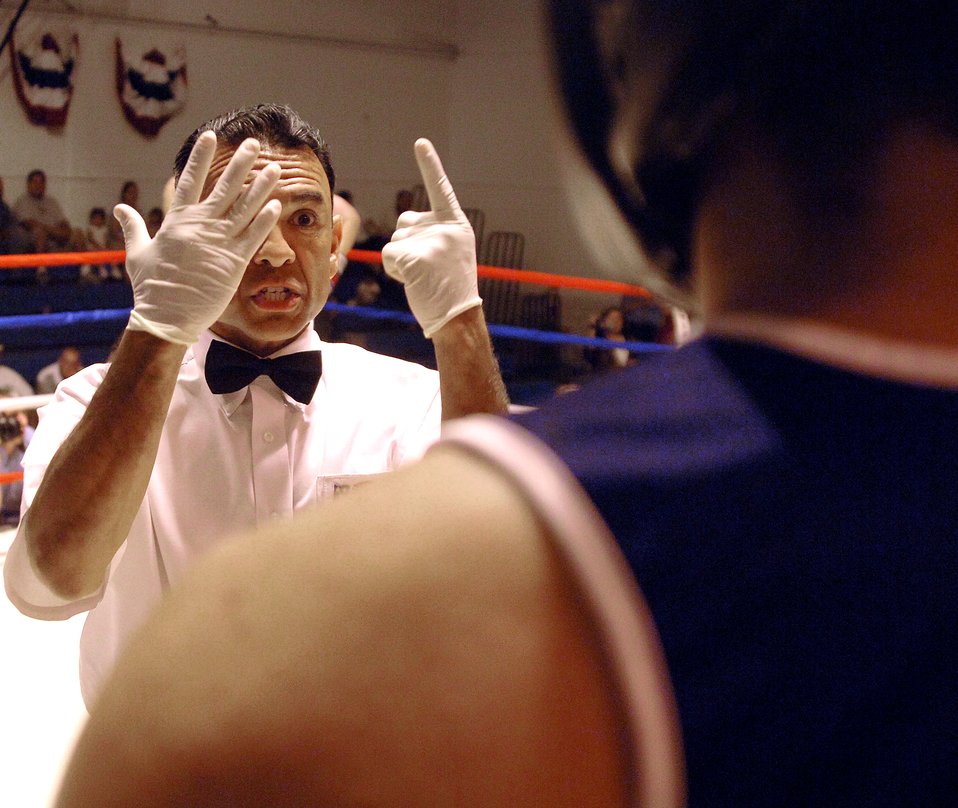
Boxing Royale

The referee gives a standing eight-count to Steven Moreno in the second round of his match against Royal Air Force Senior Aircraftsman Richard Lewis at the Boxing Royale at the Bennett Fitness Center in San Antonio on Saturday, June 10. The event featured RAF boxers competing against U.S. military and local boxers. Lewis won the bout 42 seconds into the second round by referee's decision.